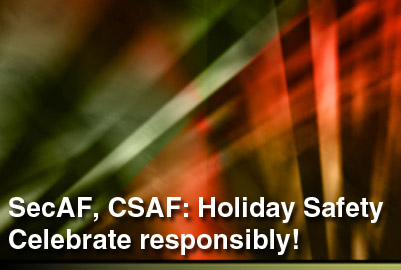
Leaders issue holiday safety message

The Air Force's top leaders send the Air Force family a holiday safety message and remind all to celebrate responsibly.